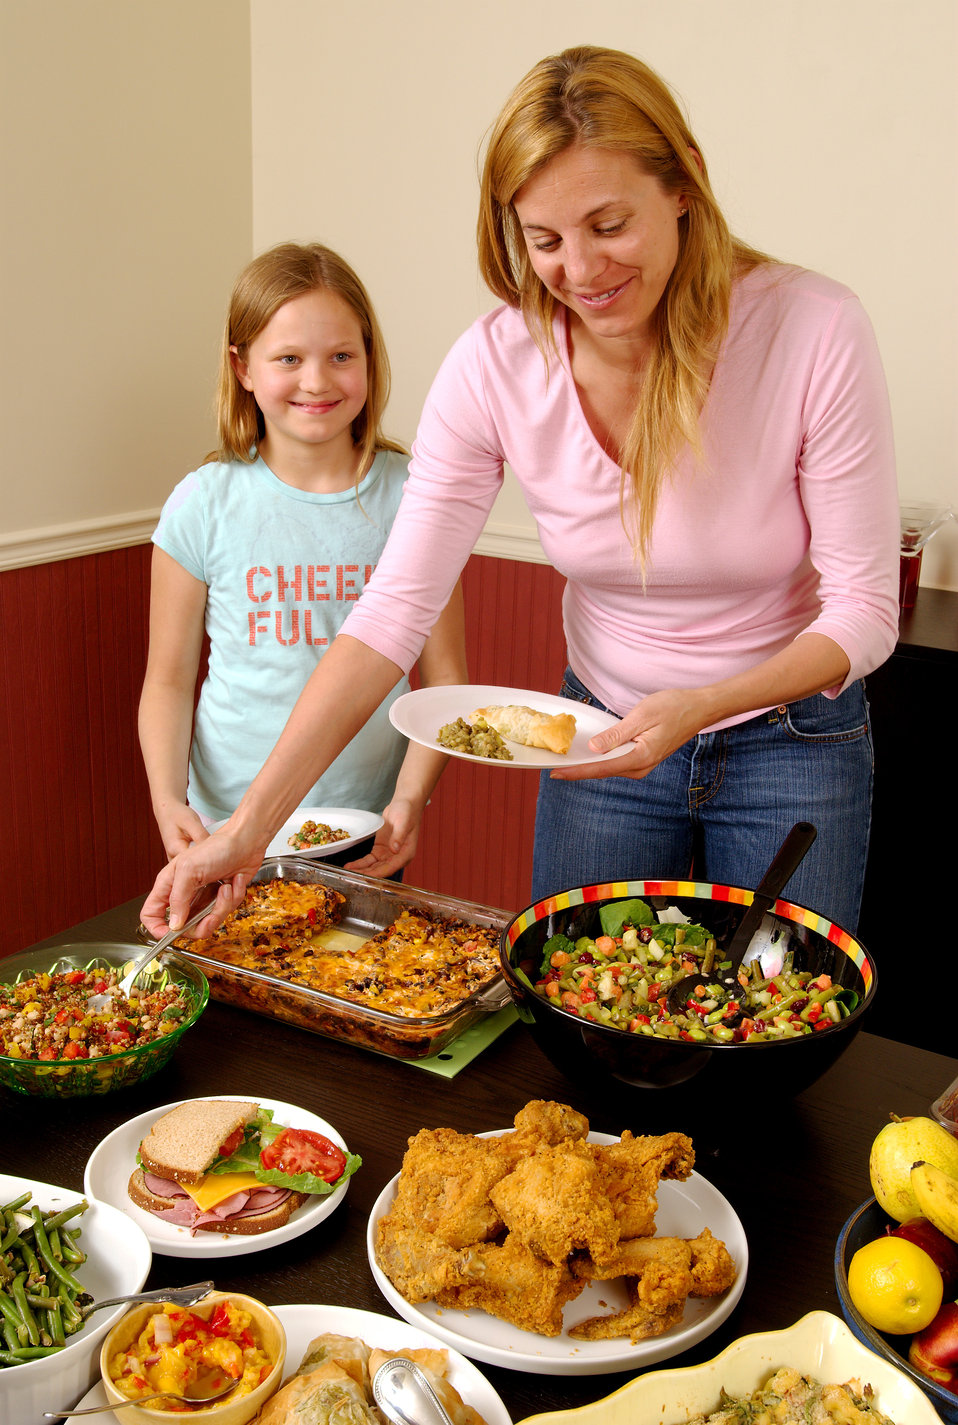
This image depicts a young girl and her mother, serving themselves at a dining table, atop which was plated a large quantity of foods representing a number of different food groups: grains, fruits, vegetables, milk products, meats/poultry/fish, and nuts/seeds/legumes.